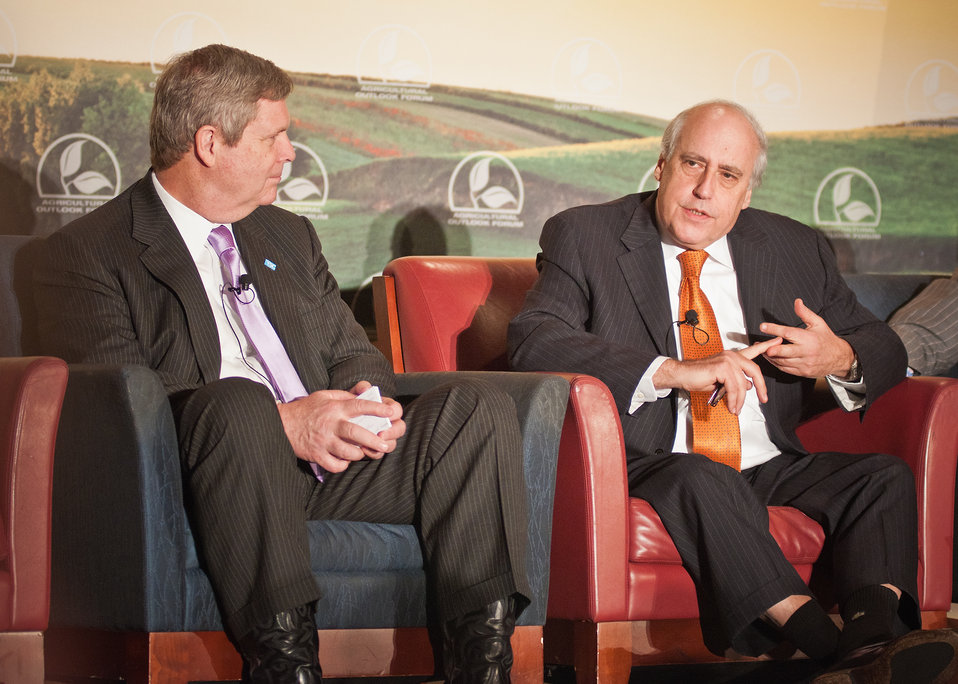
At the 2012 Agricultural Outlook Forum, “Moving Agriculture Forward” in Arlington, VA, held on Thursday, February 23, 2012, 7 former Secretaries of Agriculture sat on the plenary panel “Visions of the Future” hosted by current Agriculture Secretary Tom Vilsack. Secretary Vilsack listens to remarks made by Congressman Dan Glickman (KS).